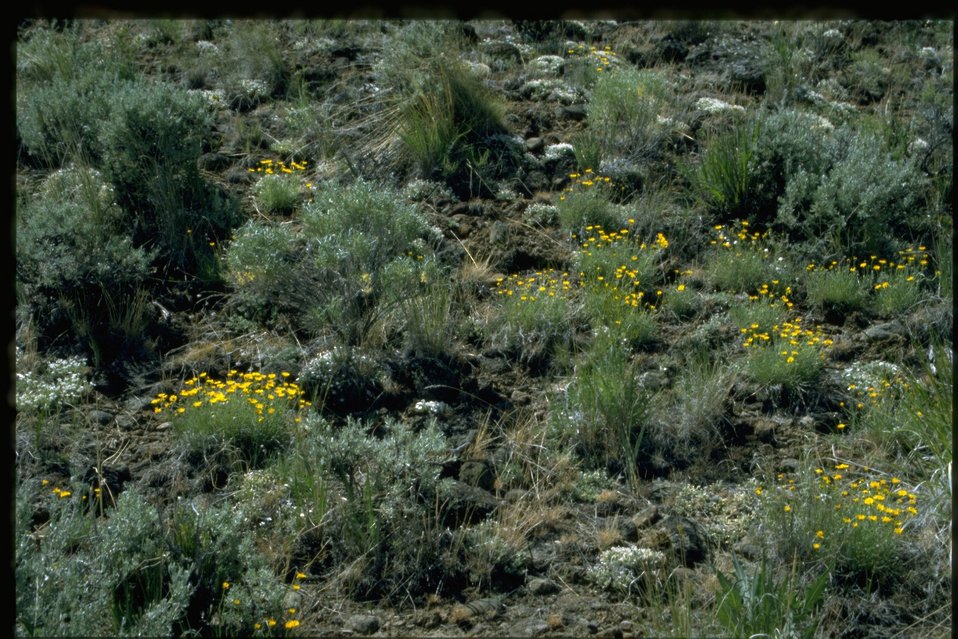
Far shot of balsamroot habitat.